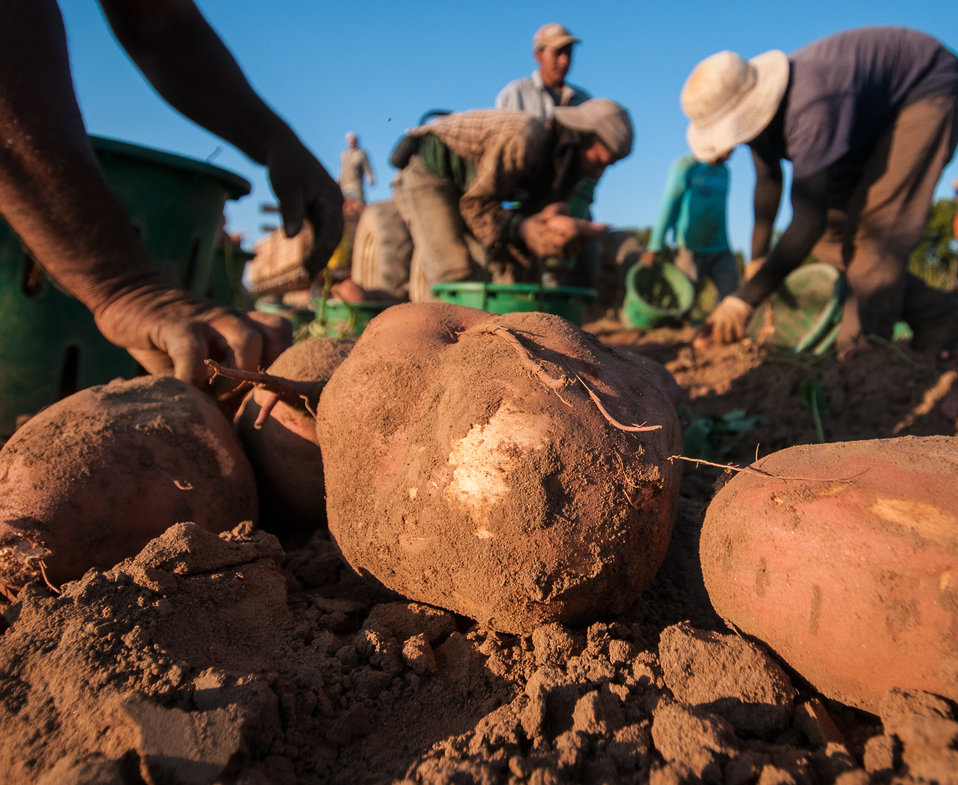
Migrant workers carefully lift large sweet potatoes as they pick and sort according the potatoes to size at Kirby Farms in Mechanicsville, VA on Sep. 20, 2013. Fresh from the ground the red skin is easily marred (light spot) and hand picking helps keep them looking good. Kirby Farms is a third-generation family farm that covers 500 acres, and generates produce and grains on a year-around operation. Please see the photoset description for more information about this harvest.